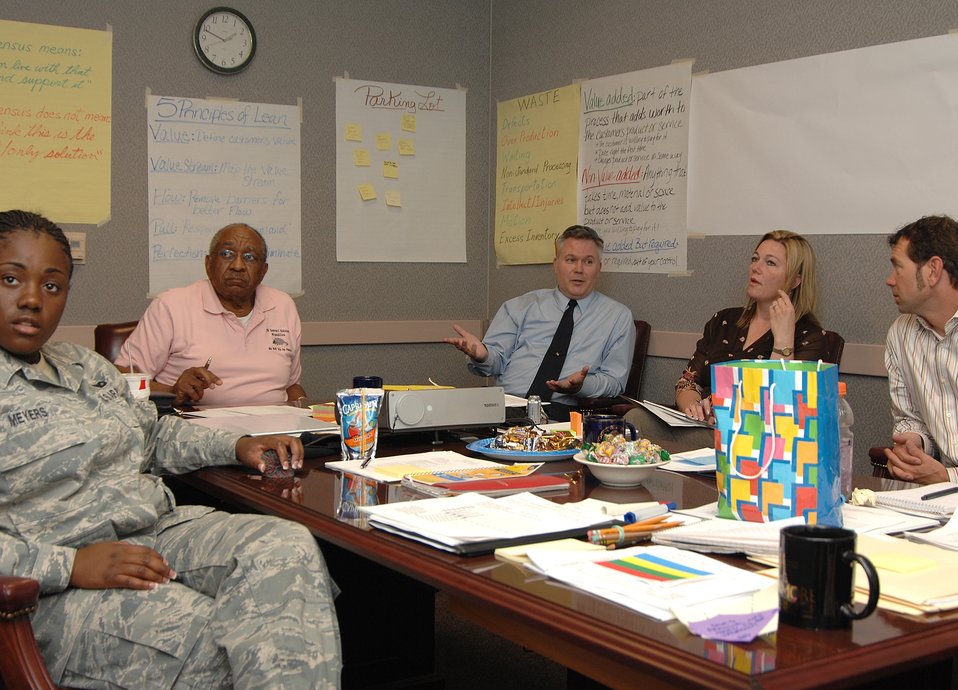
ID card process at Beale undergoes rapid improvement

Members of the 9th Mission Support Group support division at Beale Air Force Base, Calif., along with volunteers, discuss Beale's current common access card/identification card process in order to make the process a more customer-friendly one. An Air Combat Command team assisted with the Air Force Smart Operations for the 21st Century initiative.